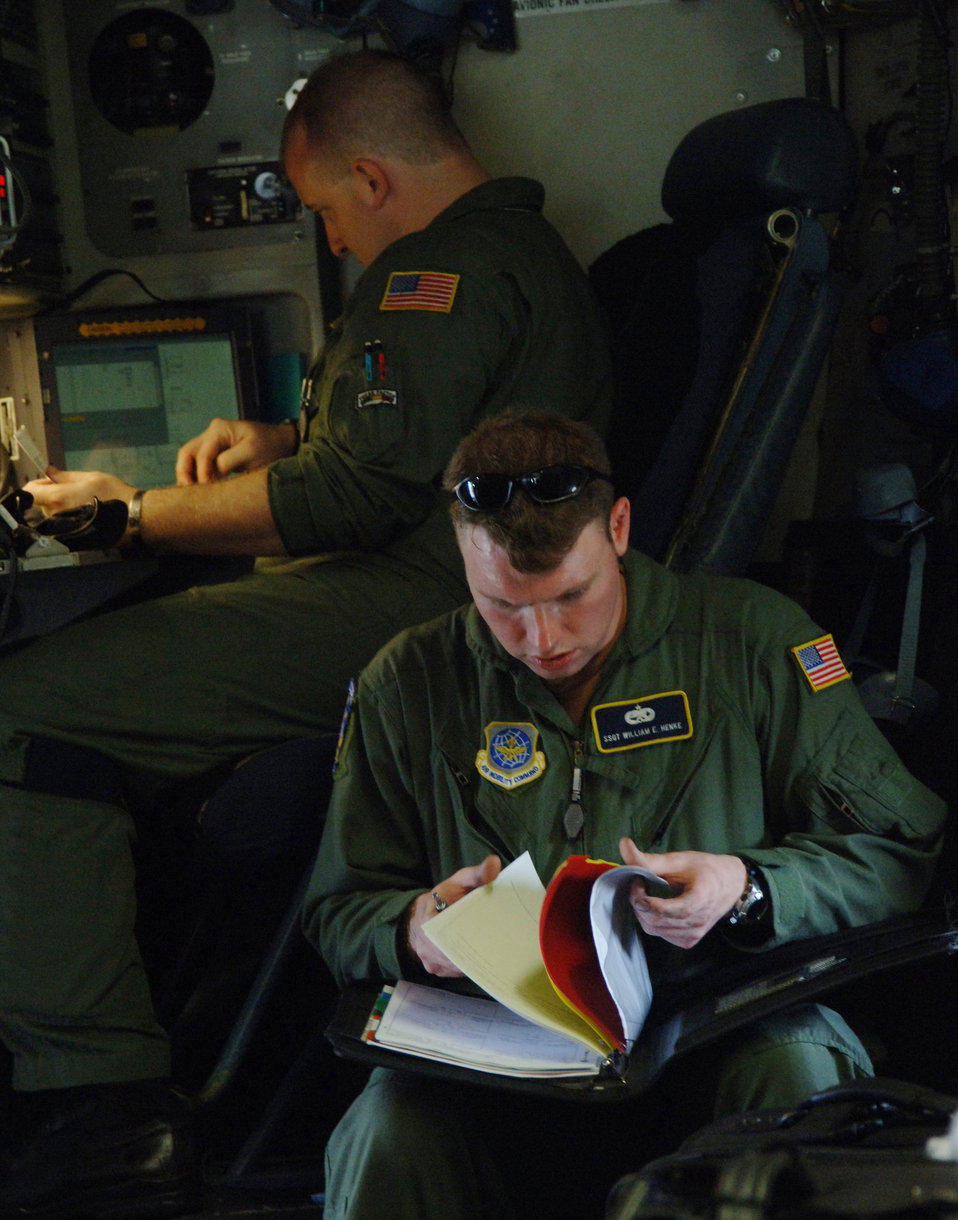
Reserve aircrew helps fight war on drugs

Staff Sgts. William Henke (front) and J.J. Hoffman check C-17 Globemaster III maintenance forms and weights and balances before takeoff from a Saint Lucia airport on Sunday, April 9, 2006. The crew transported Reserve civil engineers who are building an operations center and barracks for the police force in support of Saint Lucia's counter-drug operations. Sergeant Hoffman is a loadmaster with the 300th Airlift Squadron and Sergeant Henke is a flying crew chief with the 437th Aircraft Maintenance Squadron. Both units are out of Charleston Air Force Base, S.C.